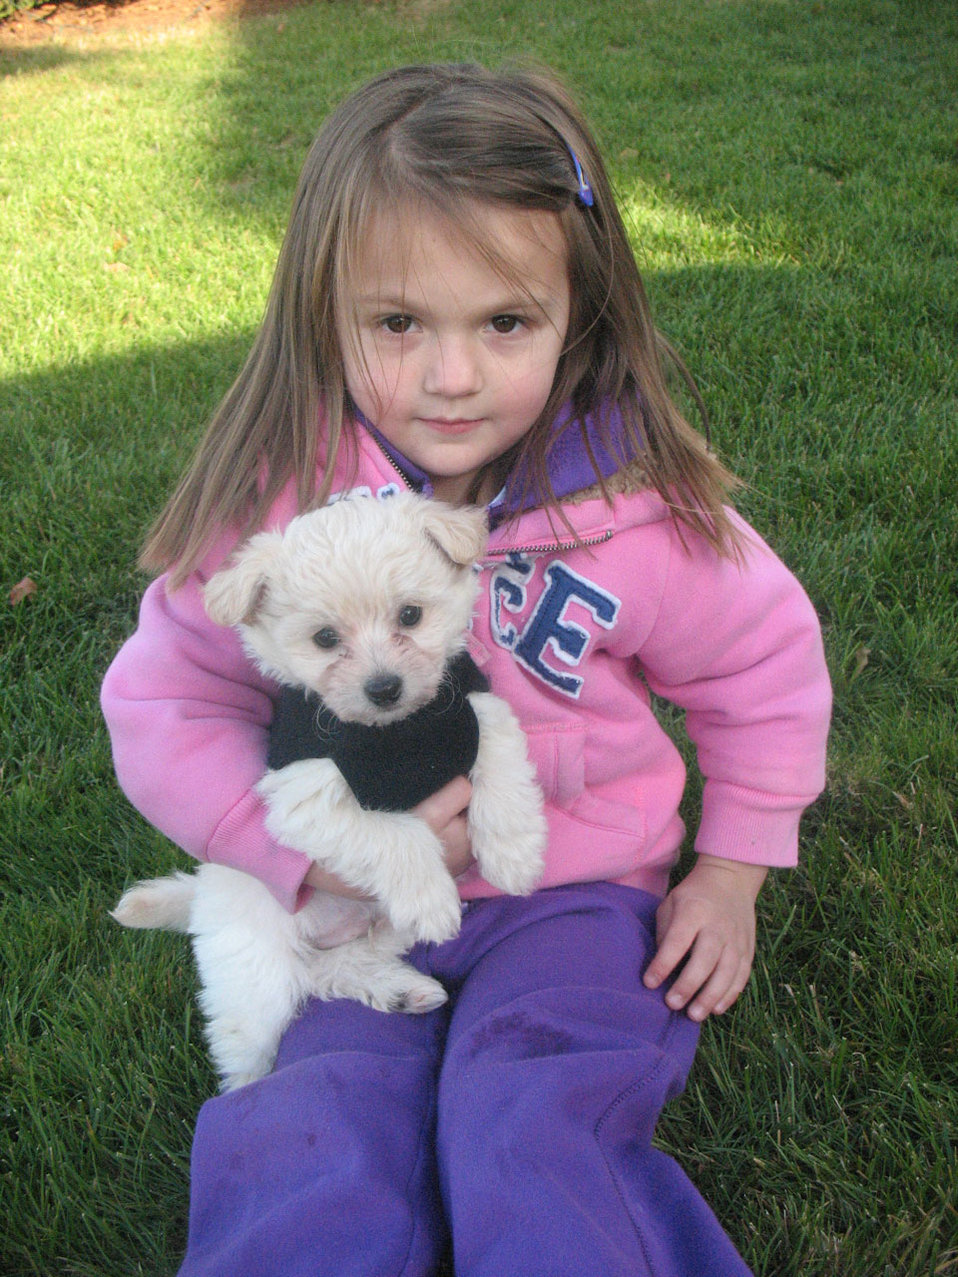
Pretty girl sitting in central park new york city.